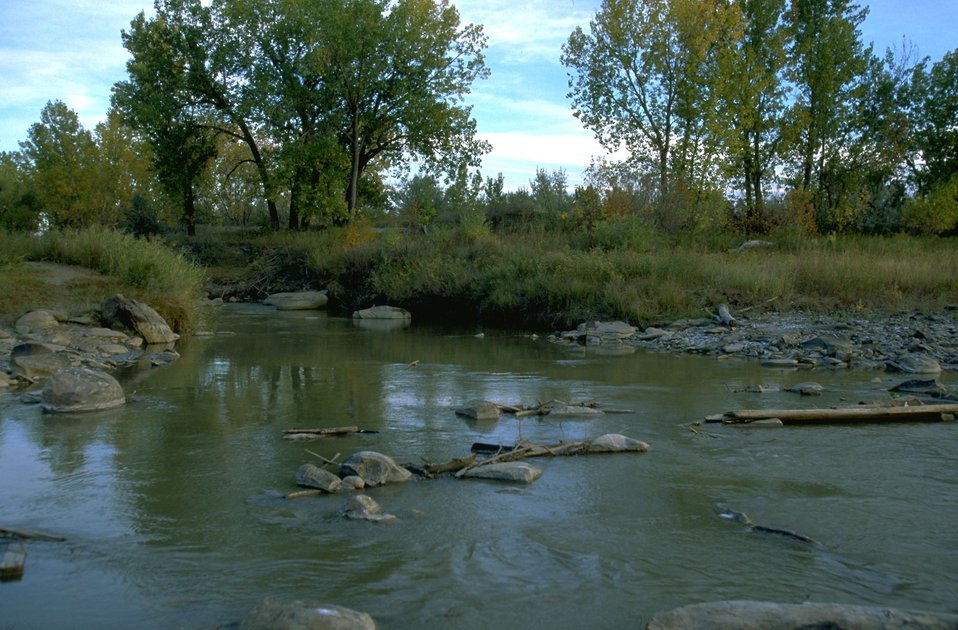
Confluence of Jones Creek and Yellowstone River at Matthews Recreation Site